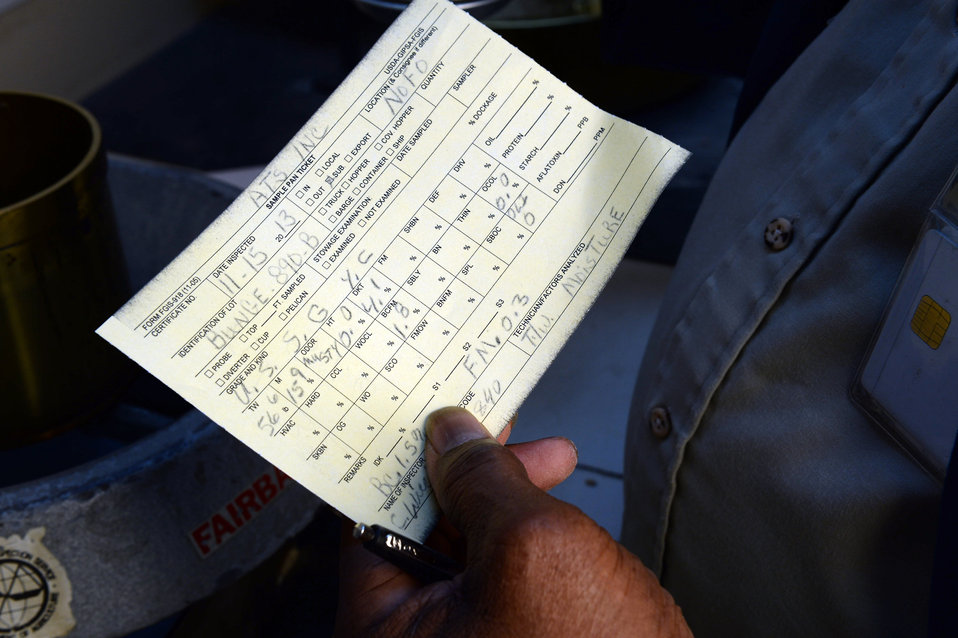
A U.S. Department of Agriculture (USDA) Grain Inspection, Packers and Stockyards Administration (GIPSA) Federal Grain Inspection Service (FGIS) employee examines the tests results from earlier corn samples at the FGIS inspection laboratory in New Orleans, LA on Monday, Nov. 18, 2013.